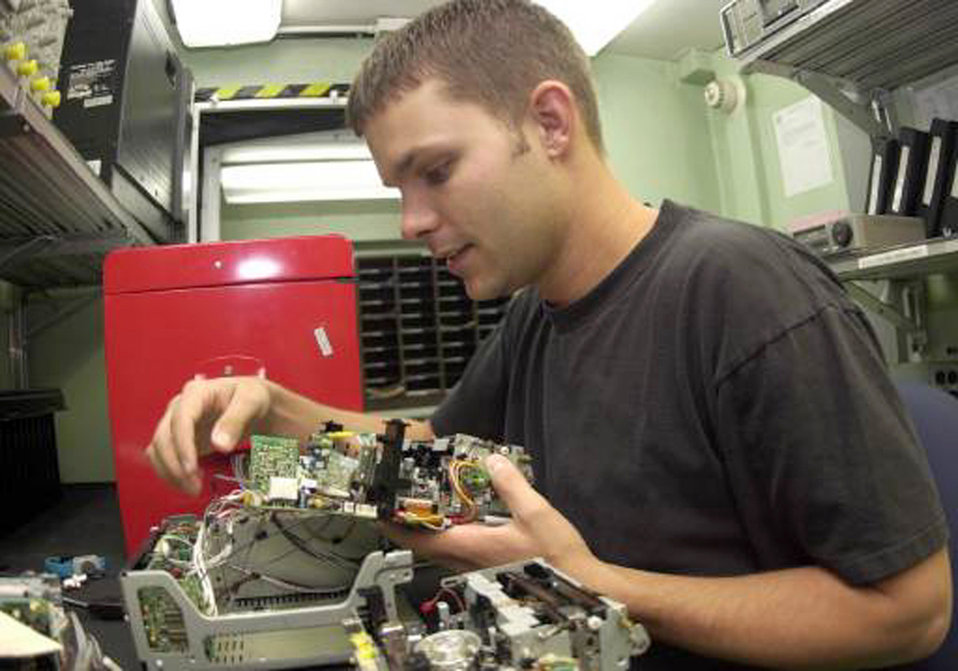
Fountaine

AVIANO AIR BASE, Italy -- Staff Sgt. Jason Fountaine, an aviation sensors journeyman with the 31st Maintenance Squadron here, performs routine maintenance on an 8 mm airborne video recorder. The recorder is used to capture aircraft mission results including information from the heads-up display.